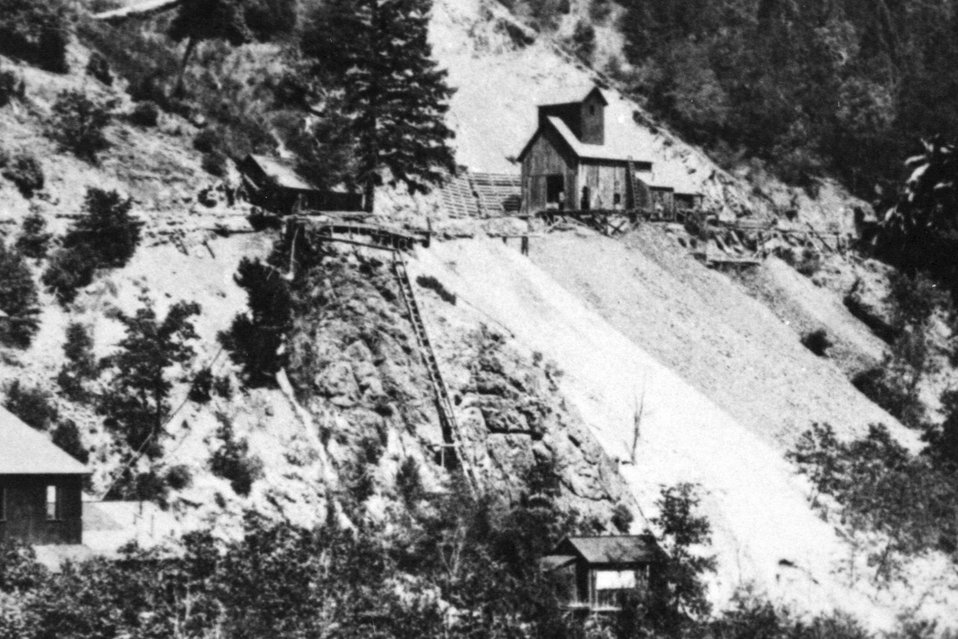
Close up view of the shaft house of the Almeda mine. C. 1910 - 1911